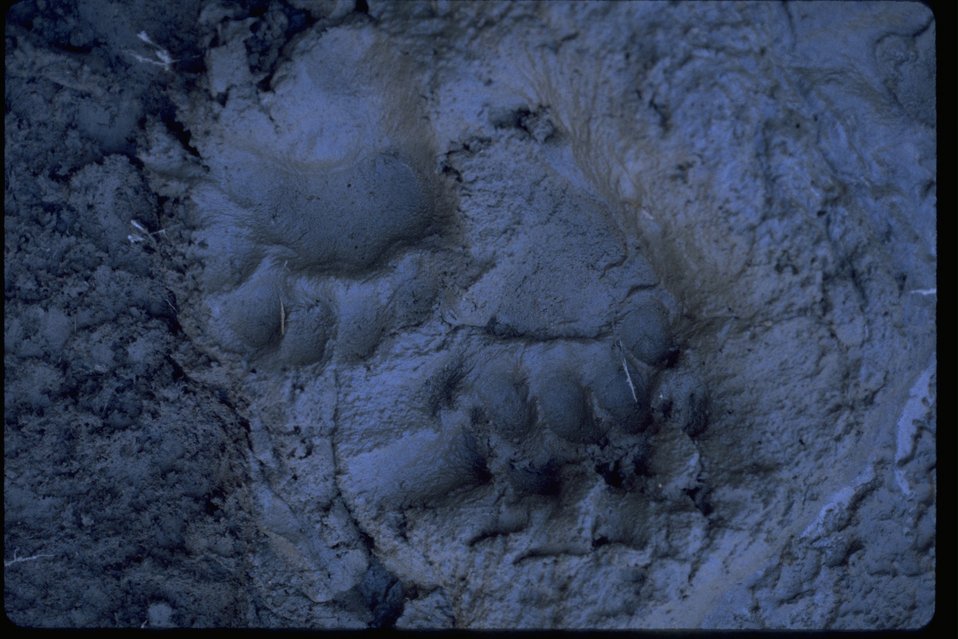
Cut bear tracks on Schoheim Road, Lone Pine Ridge.